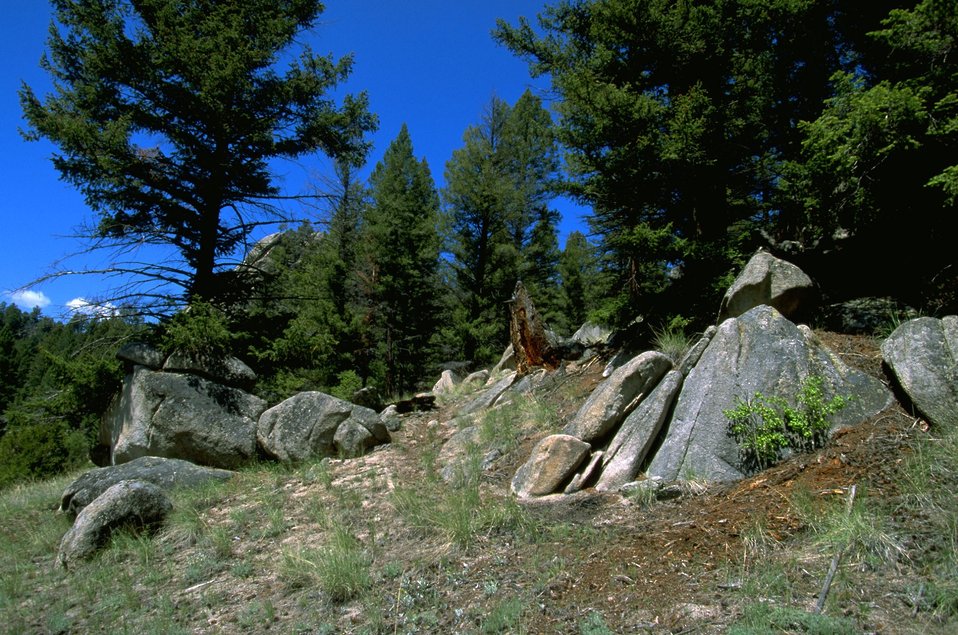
Rock formations